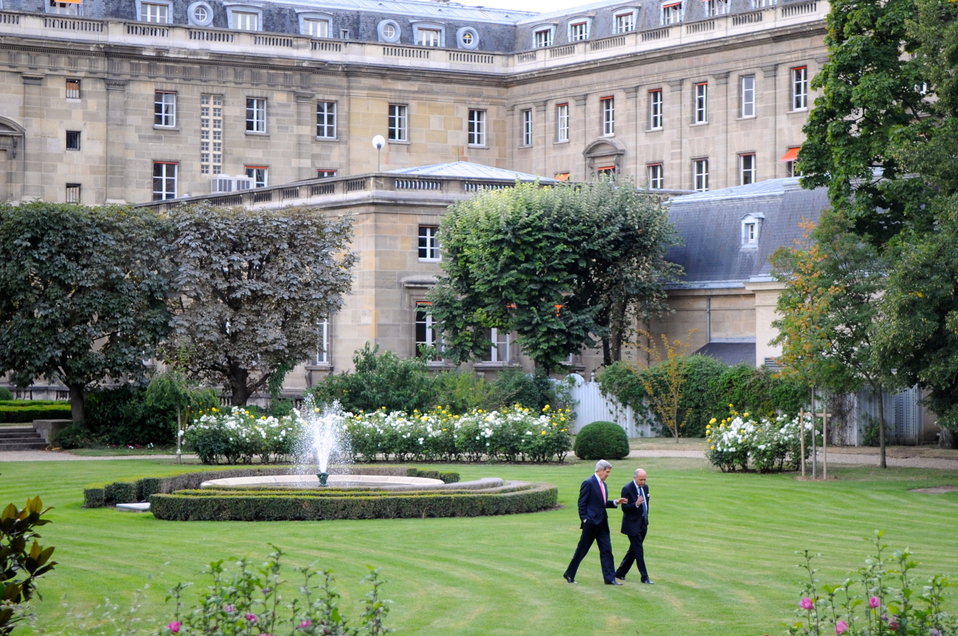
Secretary Kerry and French Foreign Minister Fabius Take Walk

U.S. Secretary of State John Kerry and French Foreign Minister Laurent Fabius take a walk on the grounds at the French Ministry of Foreign Affairs in Paris on September 7, 2013.